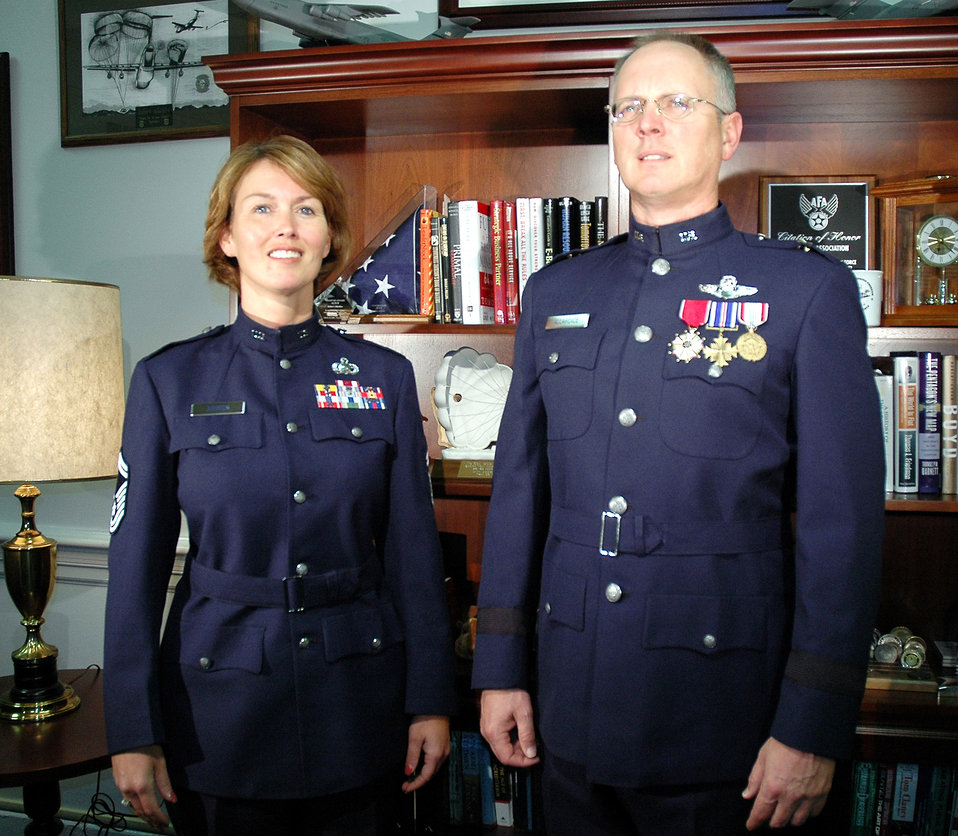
New service dress prototypes peak interest

Brig. Gen. Robert Allardice and Senior Master Sgt. Dana Athnos show off prototypes of the Billy Mitchell heritage coat in the Pentagon on Monday, May 15, 2006. General Allardice is director of Airmen development and sustainment and Sergeant Athnos is a member of the Air Force uniform board.